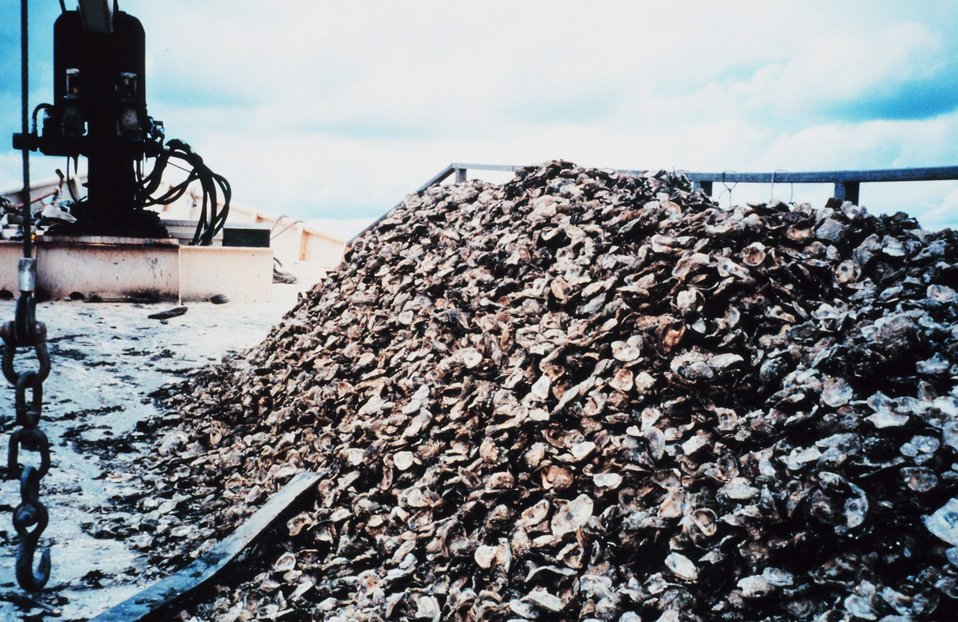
Shells containing oyster spat raised by the Oyster Recovery Partnership are piled up waiting to be moved to a permanent oyster bed off of the Severn River.